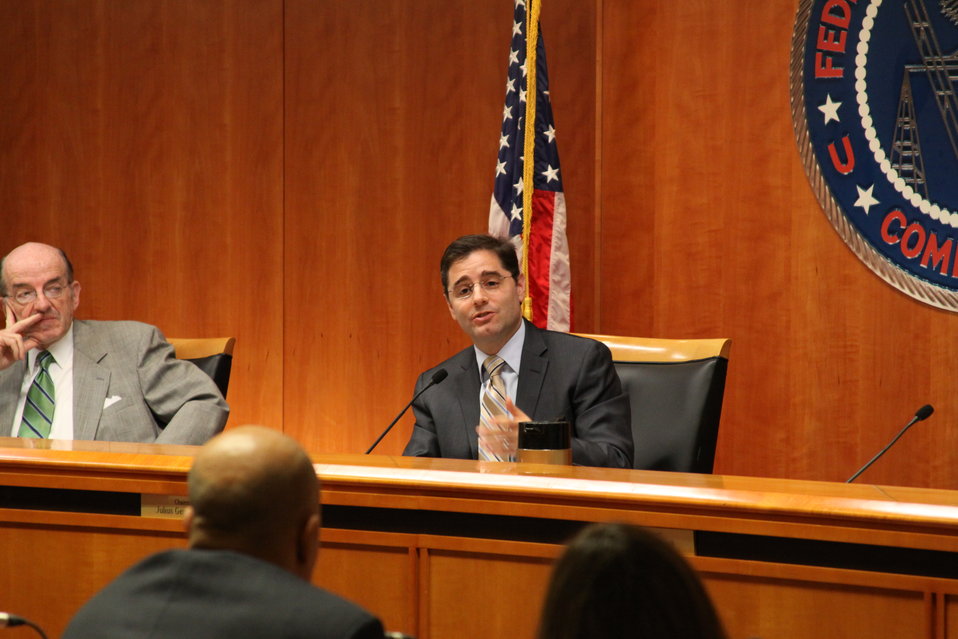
November Open Meeting